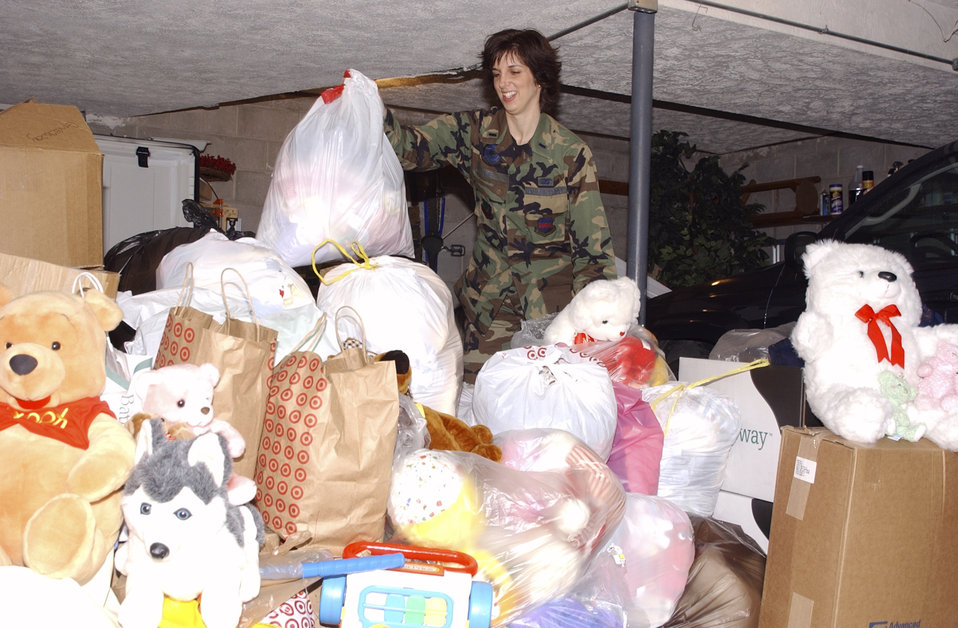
Toys, toys, toys

OFFUT AIR FORCE BASE, Neb. -- First Lt. Karen Lee organizes donations that will be sent to Balad Air Base, Iraq. She is assigned to the 55th Maintenance Squadron here.